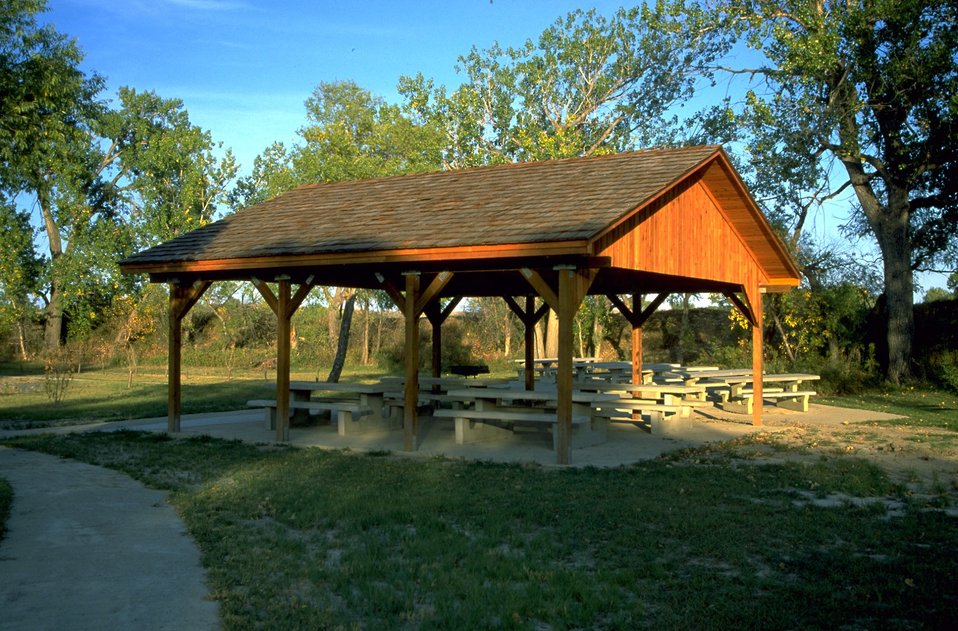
Group shelter and picnic area at Matthews Recreation Site